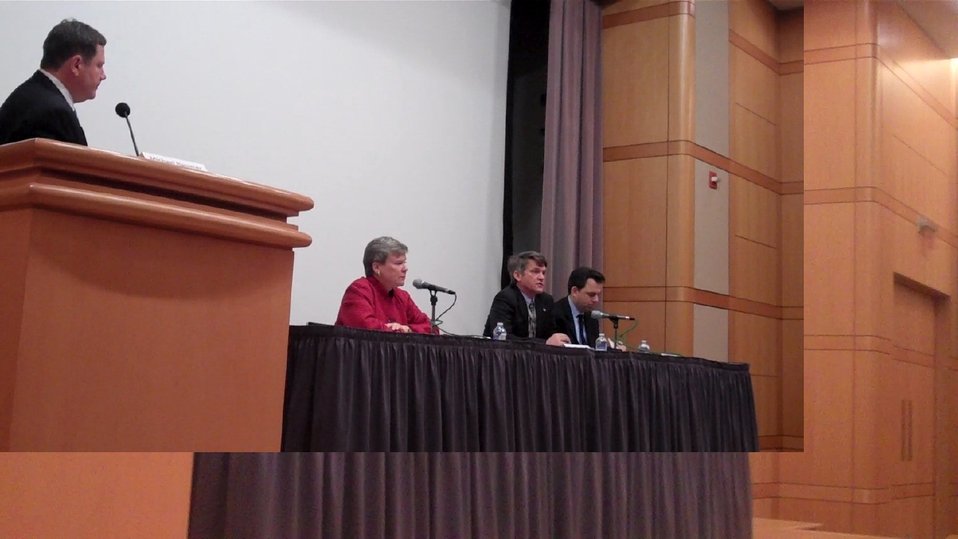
Assistant Secretary Hammer Moderates a Panel Featuring Acting Under Secretary Gottemoeller, Assistant Secretary Countryman, and Assistant Secretary Shapiro

Assistant Secretary of State for Public Affairs Michael Hammer moderates a panel featuring Acting Under Secretary of State for Arms Control and International Security Rose Gottemoeller, Assistant Secretary for International Security and Nonproliferation Thomas Countryman, and Assistant Secretary for Political-Military Affairs Andrew Shapiro, during the 3rd Annual Generation Prague Conference at the U.S. Department of State in Washington, D.C., on June 4, 2012.